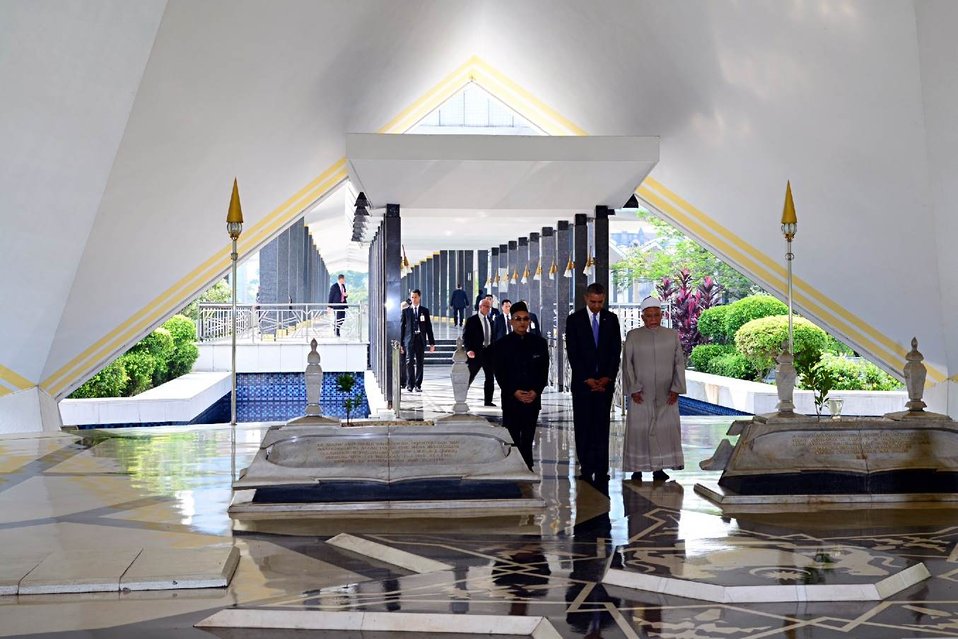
President Obama Visits the National Mosque of Malaysia

President Barack Obama visits the National Mosque of Malaysia in Kuala Lumpur, Malaysia on April 27, 2014.